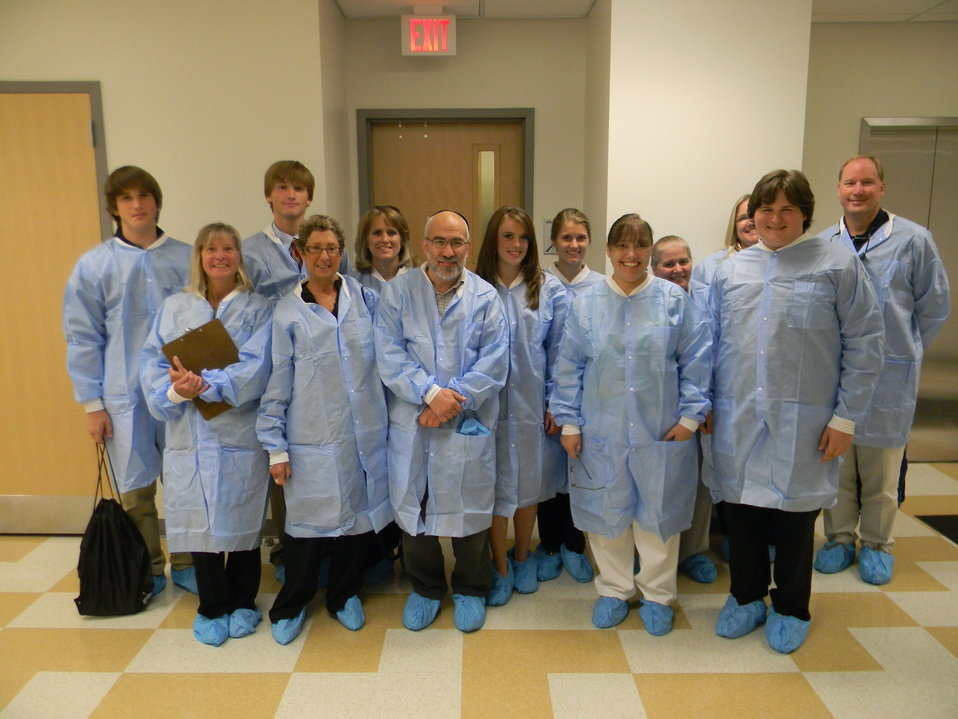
2012 Addiction Science Award Winners, their family members and NIDA Staff at NIDA IRP